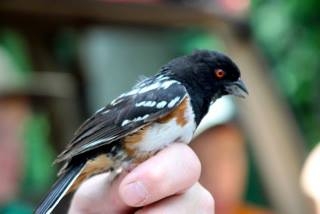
Detail photo of releasing a towhee.